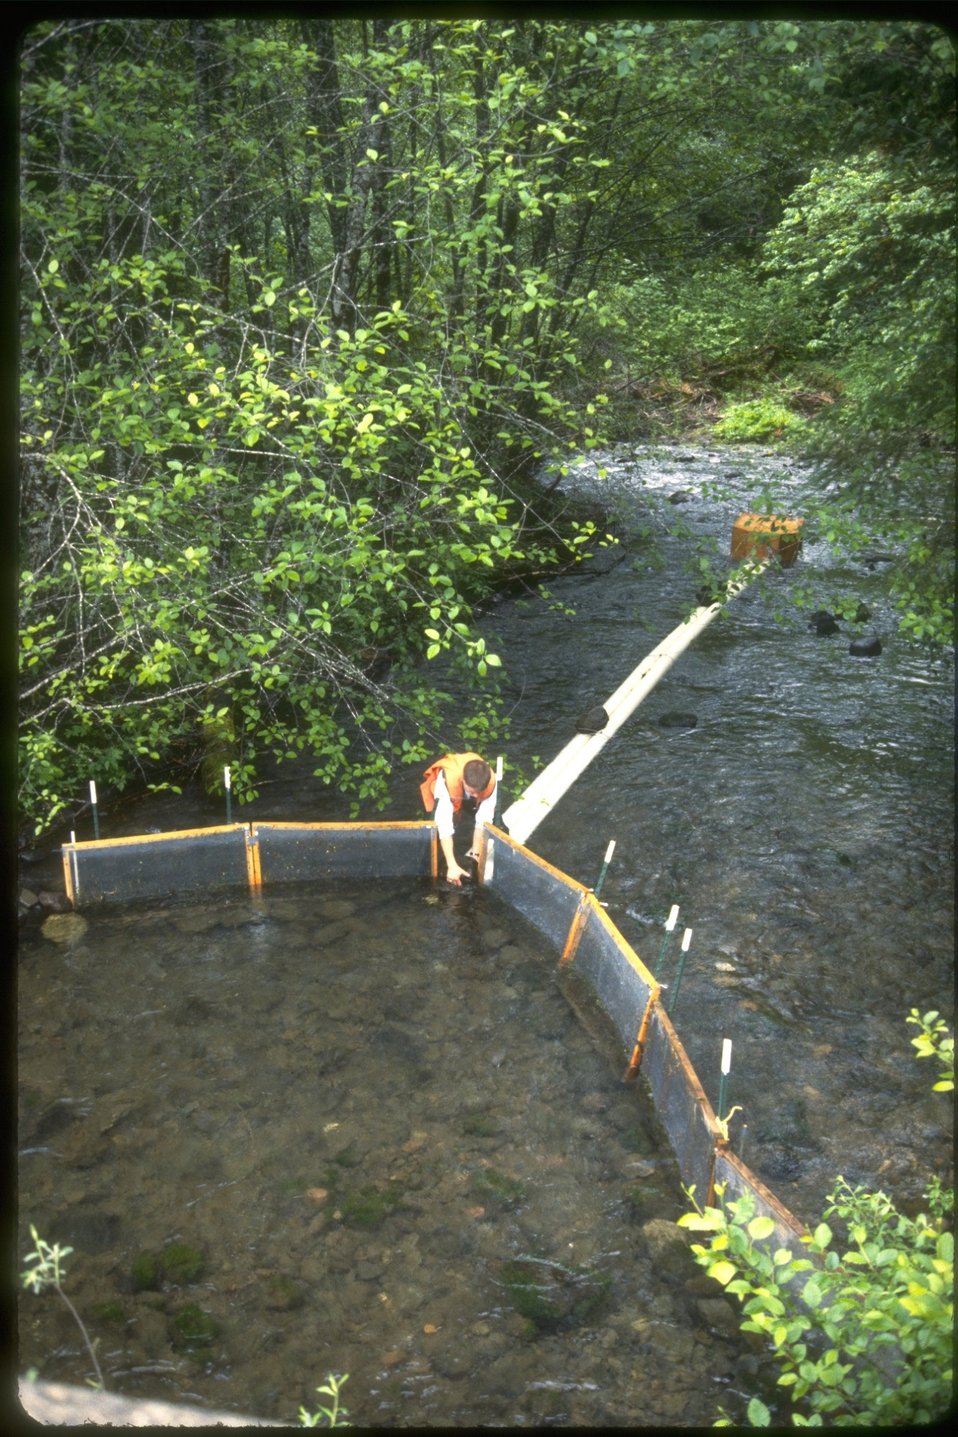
Cutthroat trout research in the Umpqua River.